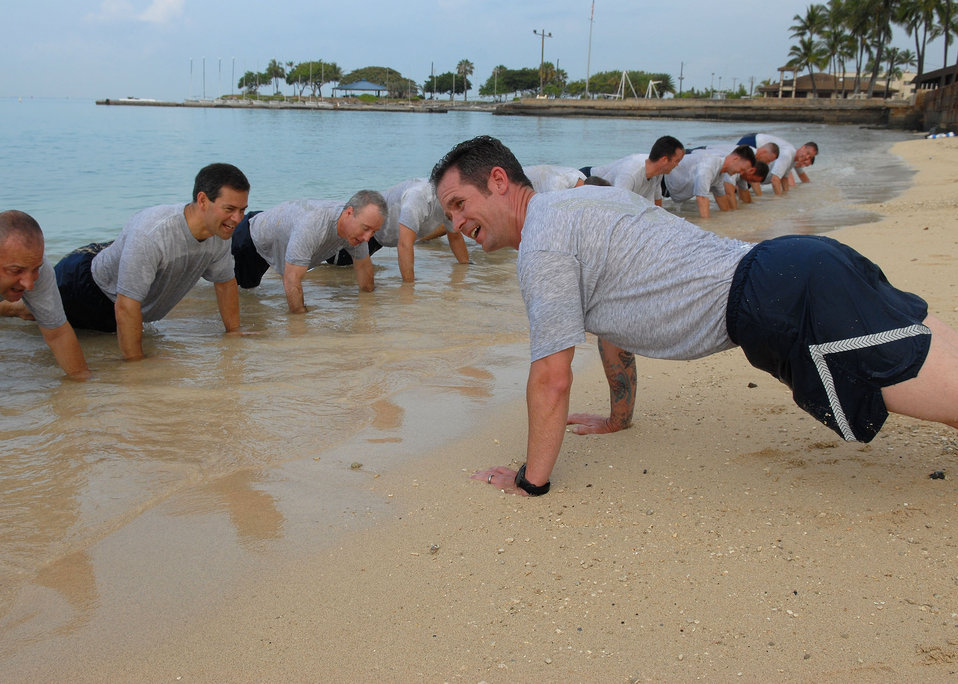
Beach workout

Senior Master Sgt. JJ Little leads a beach physical training session May 27 at Hickam Beach near Hickam Air Force Base, Hawaii. Approximately 70 people participated in the physical training session, which included a 1.5-mile run to the beach, a half-hour session of calisthenics and team building, followed by a 1.5-mile run back to the starting point. Sergeant Little is with the Pacific Air Forces Inspector General team.